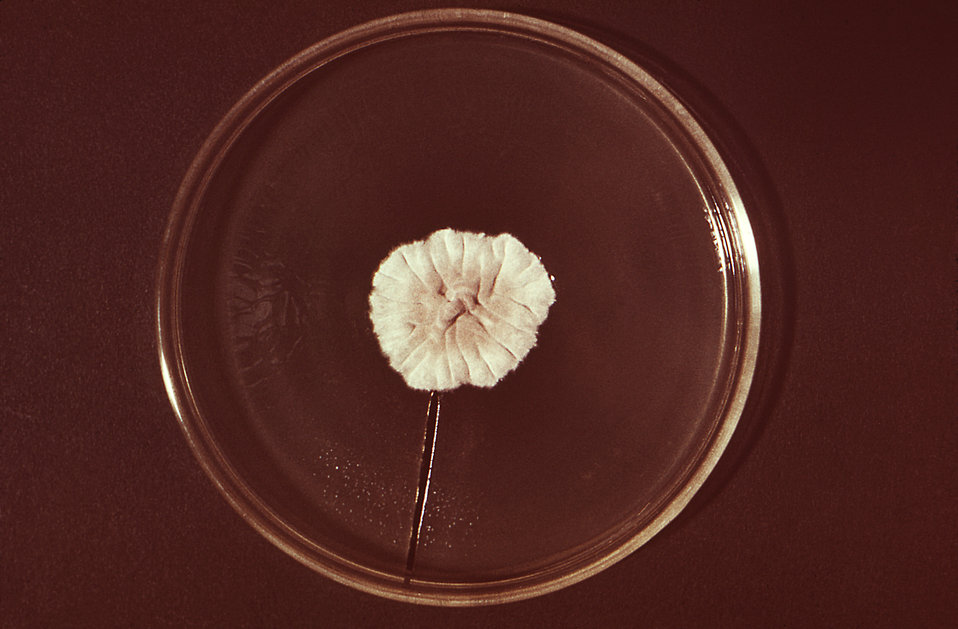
This image depicts a Petri dish containing an agar growth medium, atop which a single anthropophilic colony of Trychophyton megninii, strain A-302, fungal organisms had taken shape. This dermatophyte causes fungal infections in humans involving the skin, hair, and nails. This colony exhibited its characteristic glabrous (smooth), ruffled surface, and an off-white to beige coloration. See PHIL 14950, for the appearance of a T. megninii fungal cology viewed from the reverse side of a Petri dish culture.